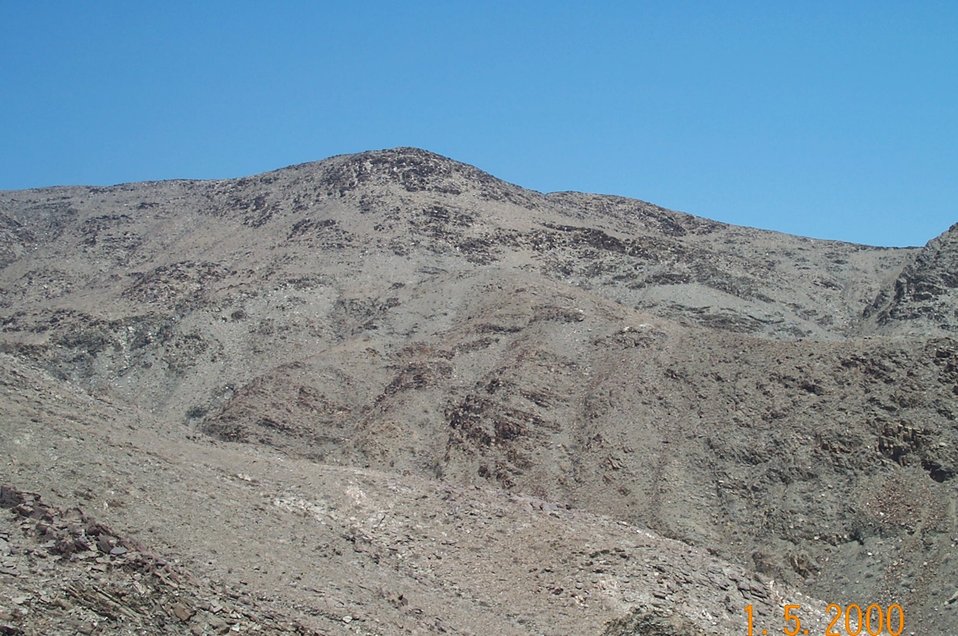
Bighorn sheep habitat